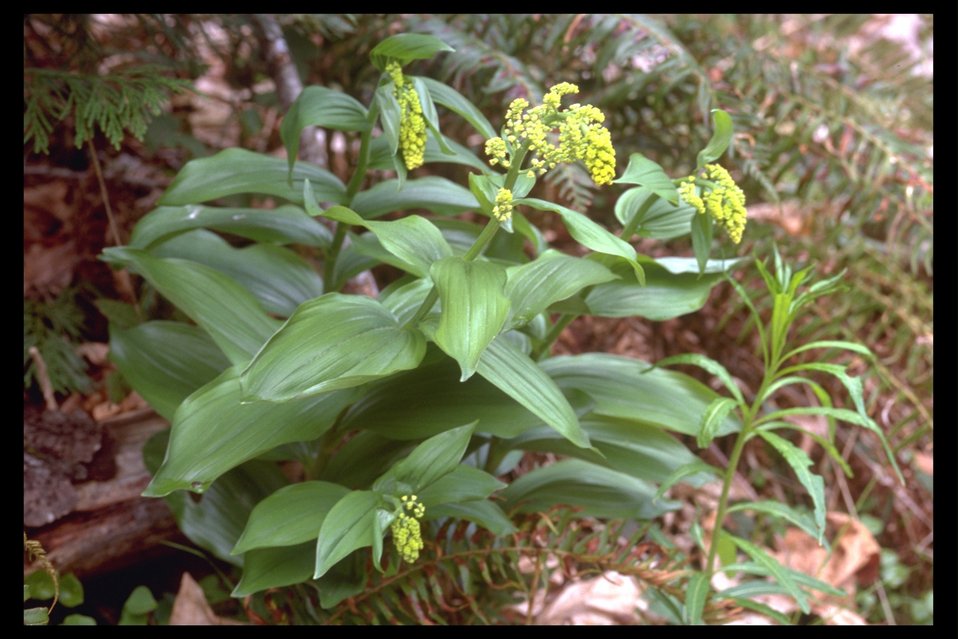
False Solomon's Seal (Smilacina racemosa) found at West Fork Evans Creek Drain gage (Rock Creek).